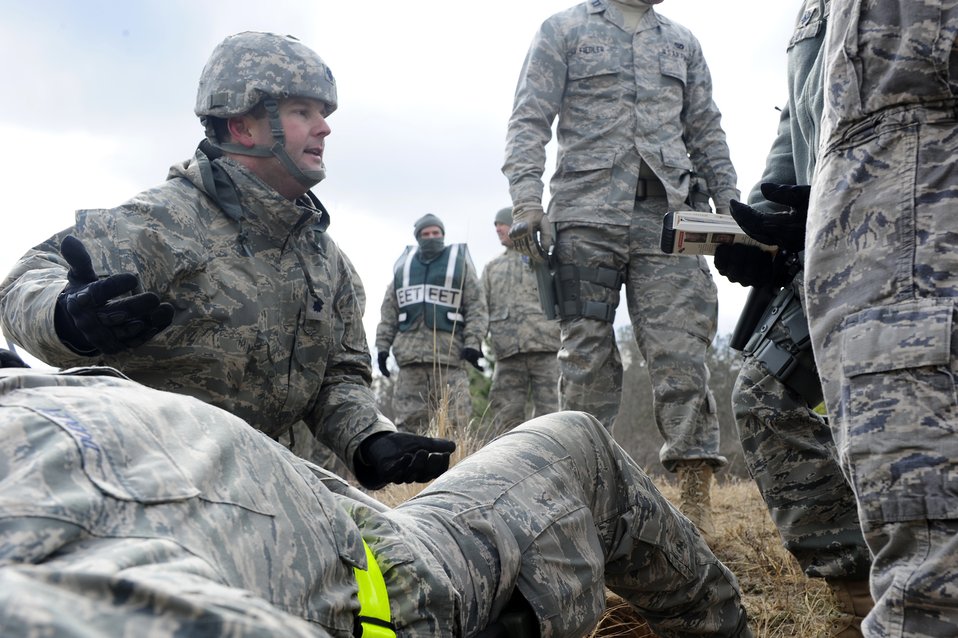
Joint operational access exercise

Airmen from the 570th Global Mobility Readiness Squadron discuss how to care for an